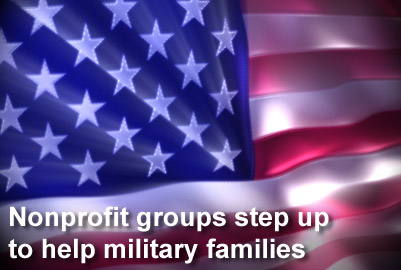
Nonprofit groups step up to help military families